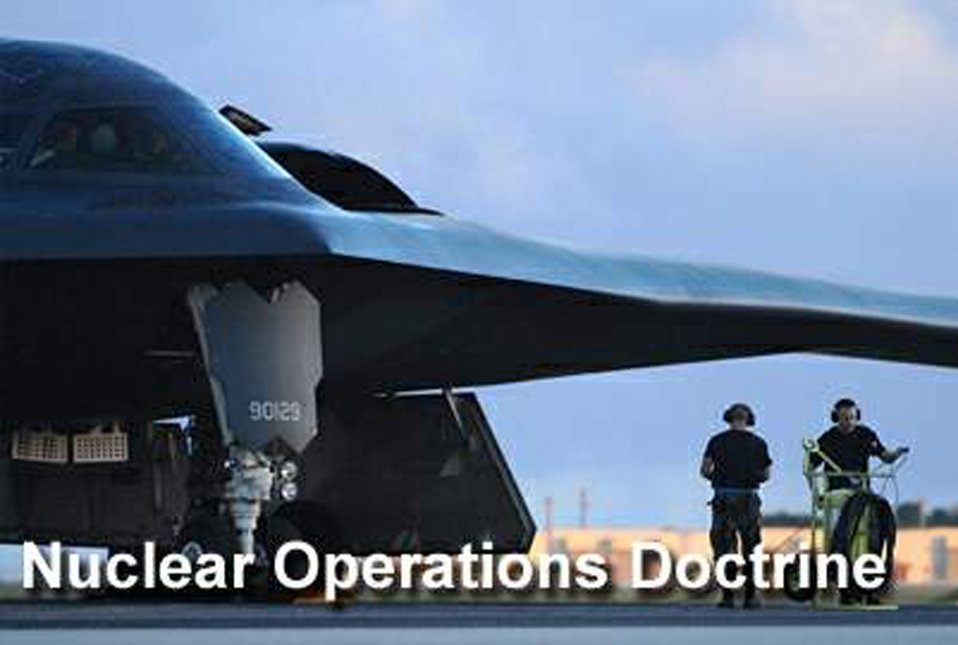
Air Force officials publish new nuclear operations doctrine

Air Force officials here published its newest version of Nuclear Operations doctrine June 1 to replace the 11-year old existing doctrine.